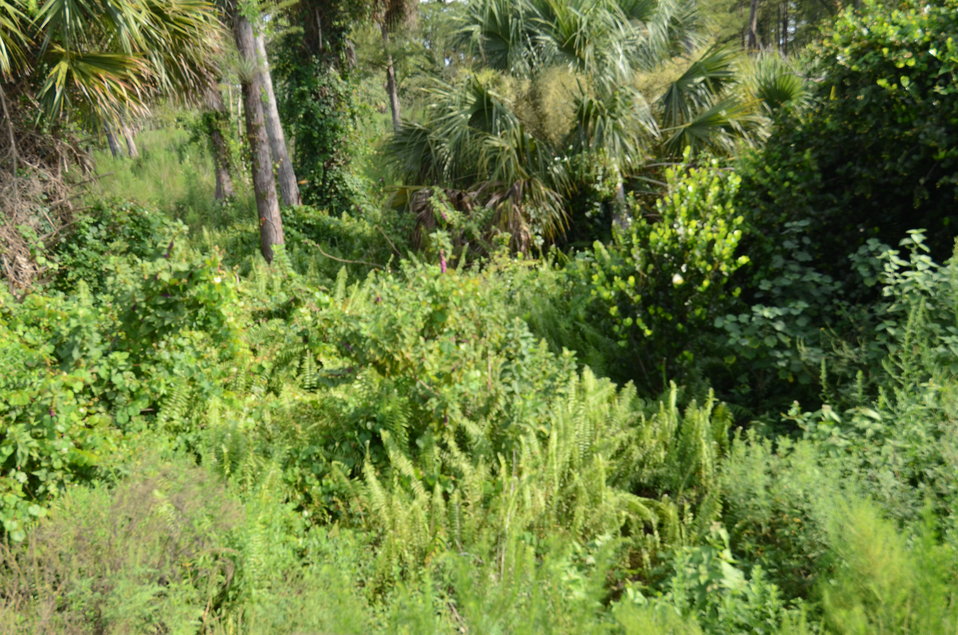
Agriculture Secretary Tom Vilsack today announced $100 million in financial assistance to acquire permanent easements from eligible landowners in four counties and assist with wetland restoration on nearly 24,000 acres of agricultural land in the Northern Everglades Watershed, FL, on Thursday, August 8, 2011.